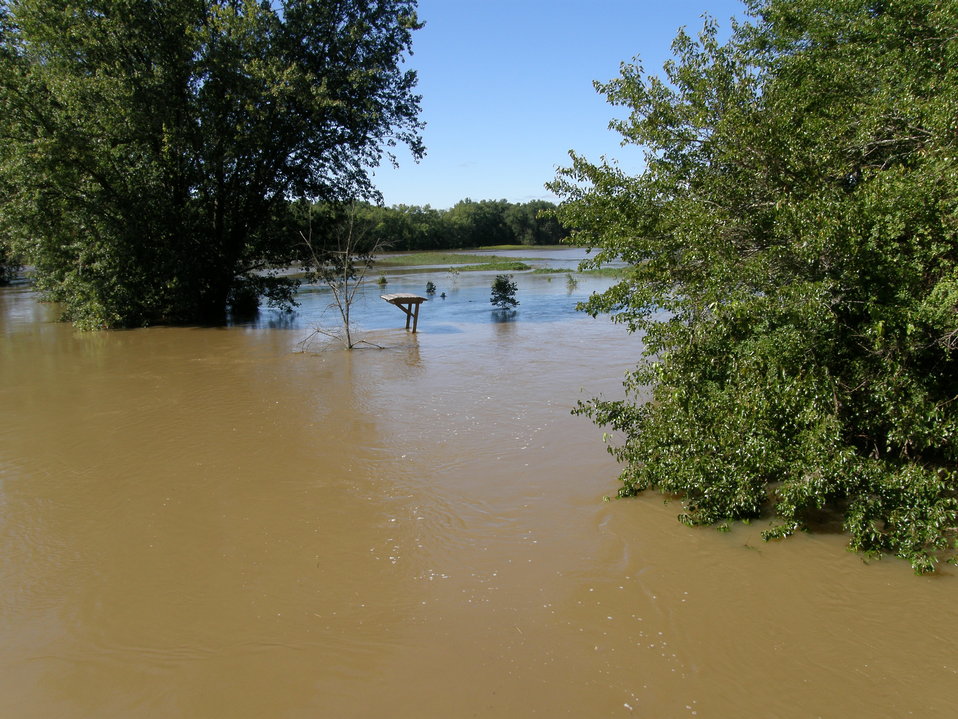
Flooding at Wallkill River National Wildlife Refuge

Bassett's Bridge canoe launch and fishing access. Meagan Racey/USFWS